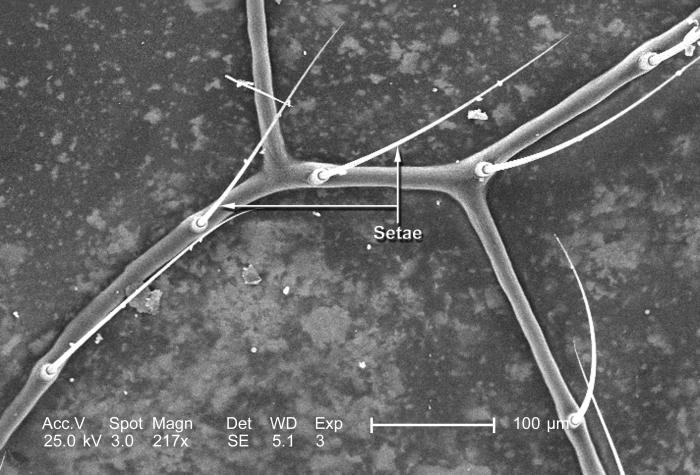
Under a relatively low magnification of 217x, this 2005 scanning electron micrograph (SEM) depicted the wing venation of an unidentified deceased dragonfly found on the grounds of the Decatur, Georgia suburbs. The wing veins fulfill a number of functions including the regulation of the insect's temperature by allowing its blood to circulate through the beating wings, thereby, dissipating excessive heat, or warming its blood when its too cool. Due to an increased turgor pressure produced by fluid-filled vessels the wing veins act as supportive struts, maintaining the structural shape of the bilateral wings during flight. The wings also act as sensory structures, due to the presence of sensorial hairs, or 'setae' on their surfaces, which can be clearly seen in this image.